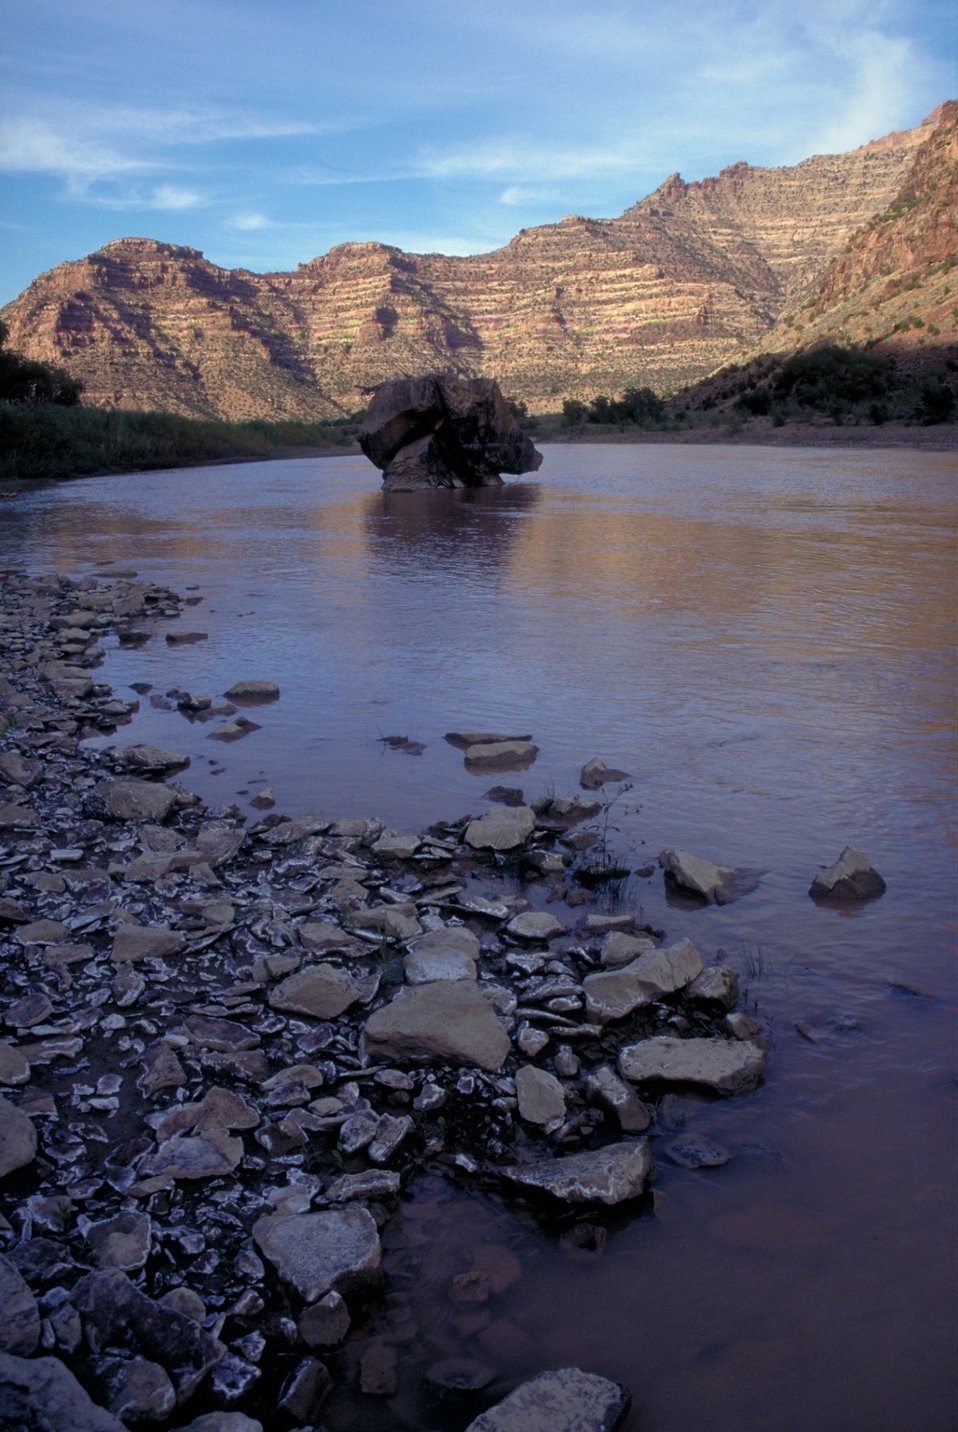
Desolation/Gray Canyons near Price, Utah.